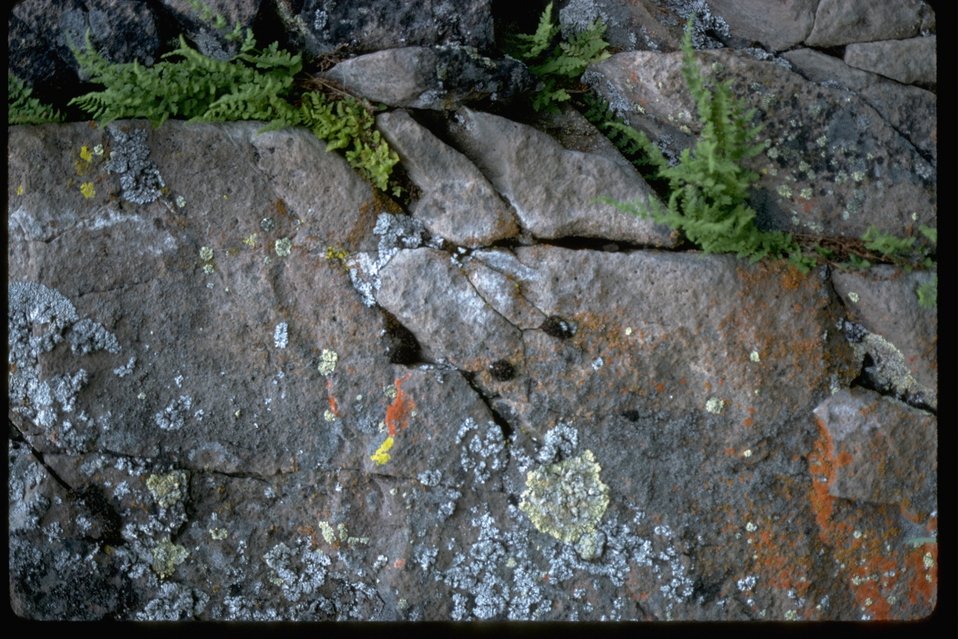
Lichen on rocks.